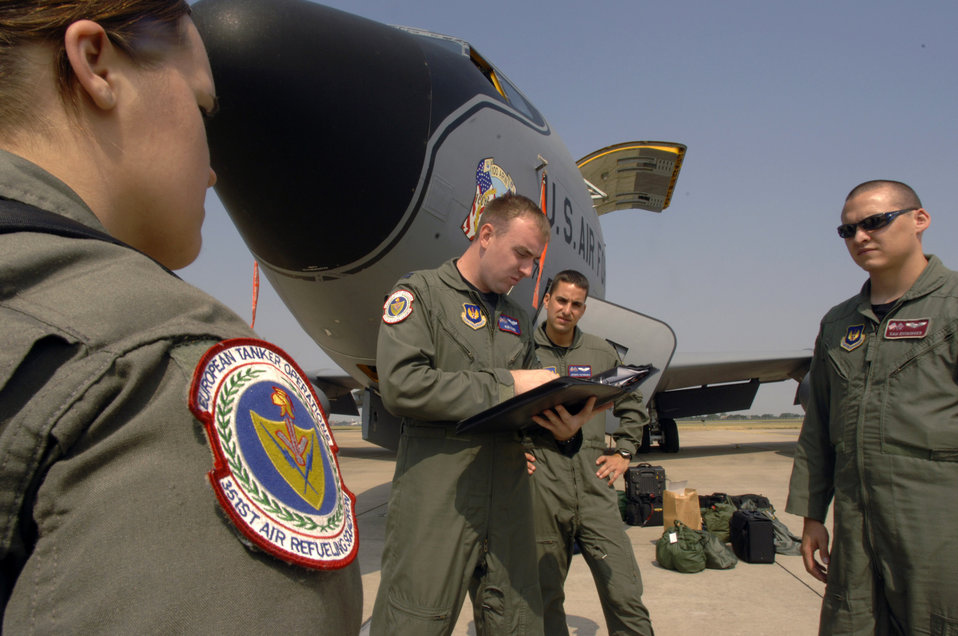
Long days, flexibility part of tanker crew's life

Refueling boom operator Staff Sgt. Andrea Otto and pilots (left to right) Capts. Sam Ensminger, Joseph Petrosky and Rob Kline hold a preflight briefing below the nose of their KC-135 Stratotanker before their mission from Royal Air Force Mildenhall, England, on July 25. The crew refueled six Belgian F-16 Fighting Falcons over the North Sea participating in NATO exercise Wycombe Warrior. Aircrews from the 351st Air Refueling Squadron fly about than 50 missions each week.